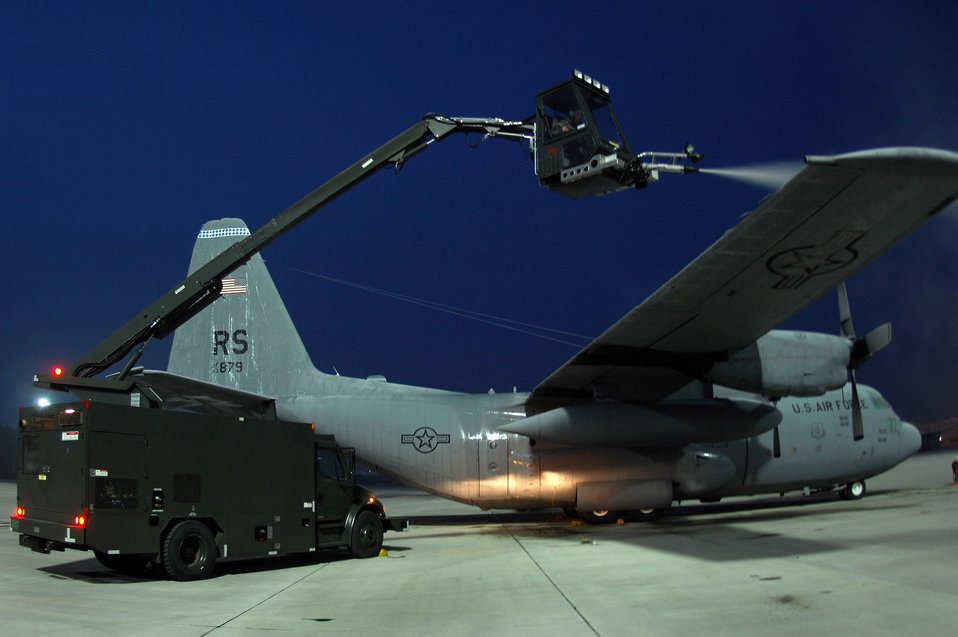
The icemen come, the ice then goes

Senior Airman Dennis Masor and Airman 1st Class Kevin Butler work together to de-ice a C-130 Hercules aircraft April 8 at Ramstein Air Base, Germany. Afterwards, the aircraft was ready for an early morning mission. The Airmen are assigned to the 86th Aircraft Maintenance Squadron.